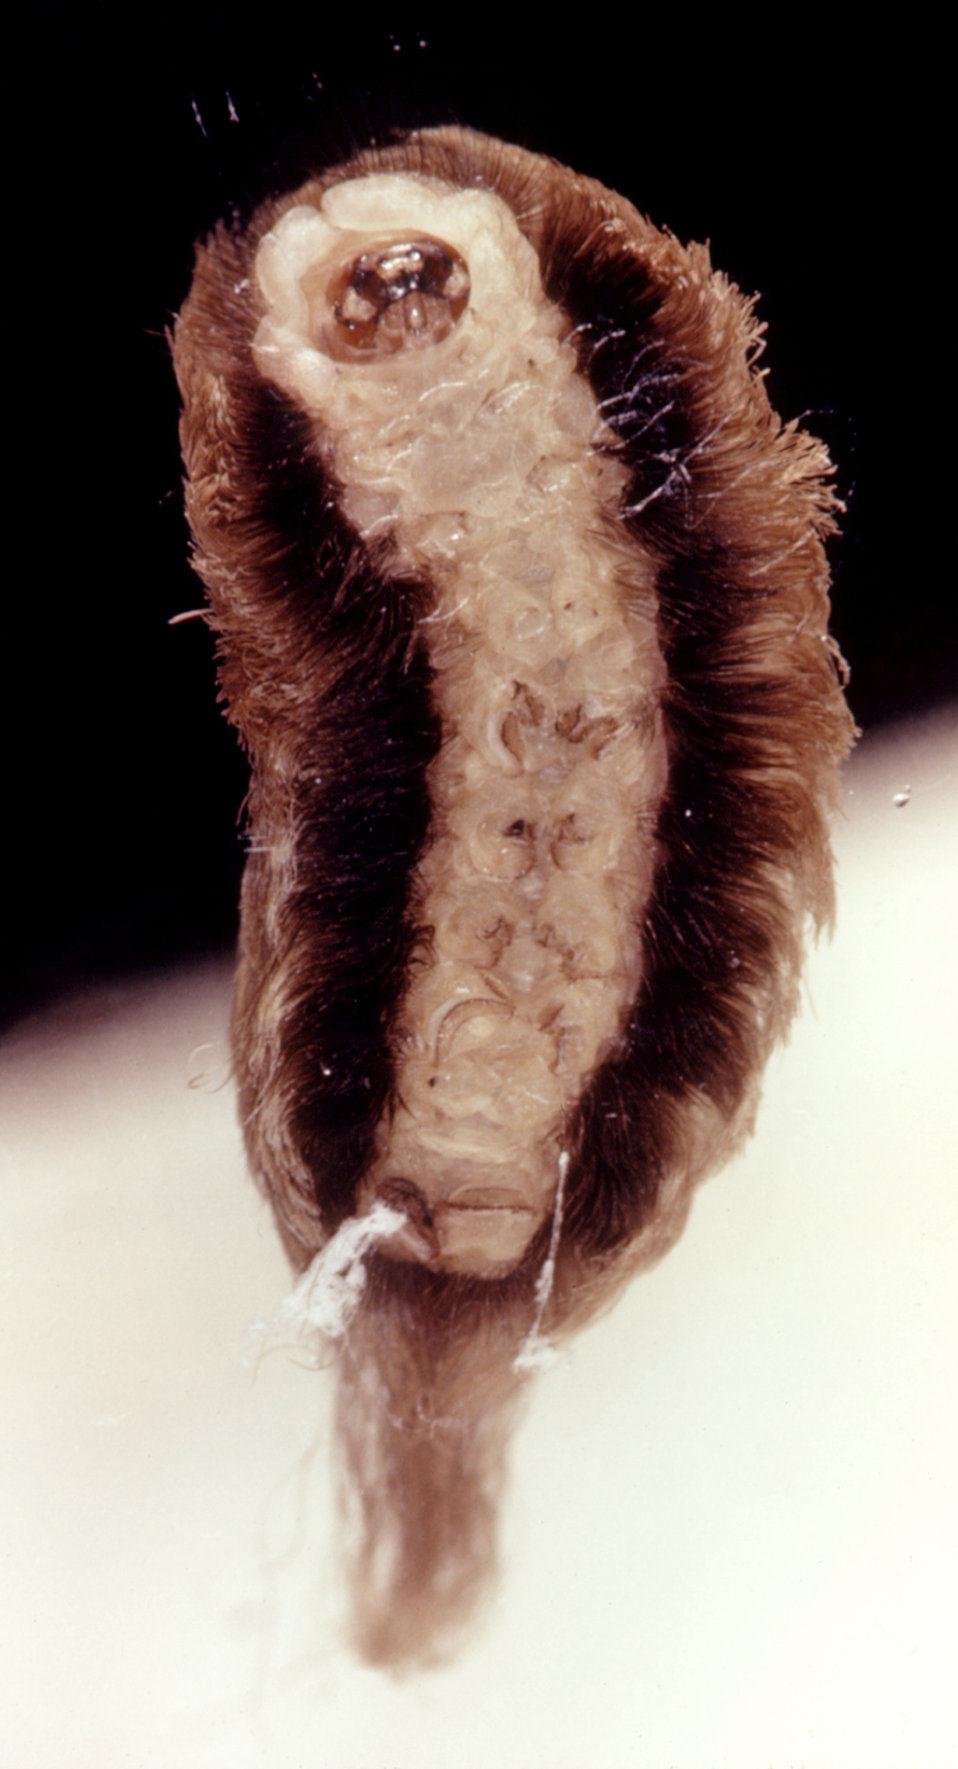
This is a ventral view of a puss caterpillar, Megalopyge opercularis, an urticating, or hive-producing caterpillar.